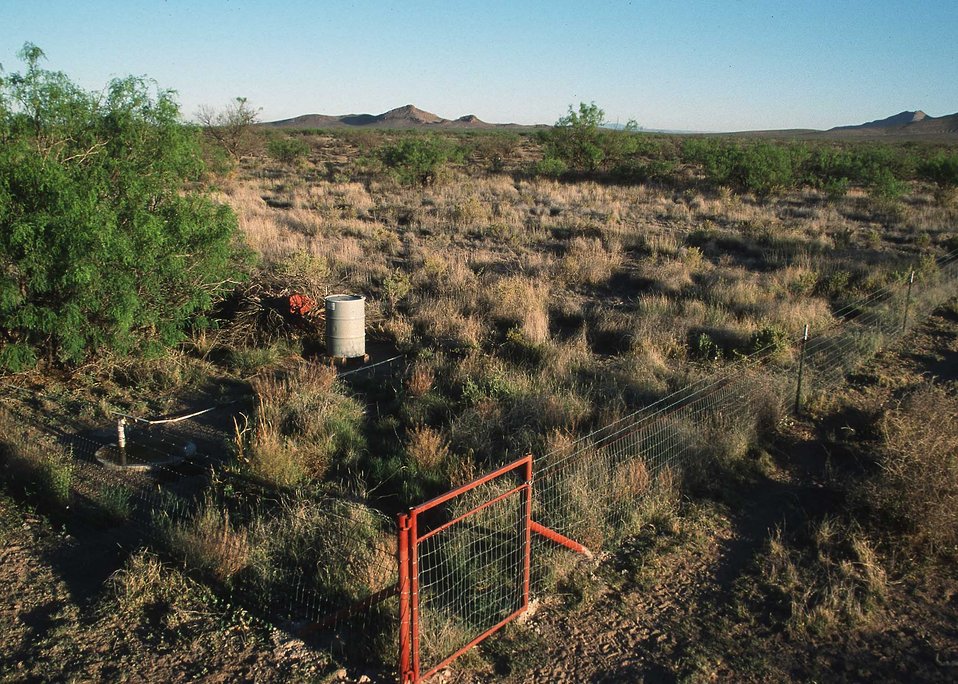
Wildlife Habitat area in rangeland in southern New Mexico.